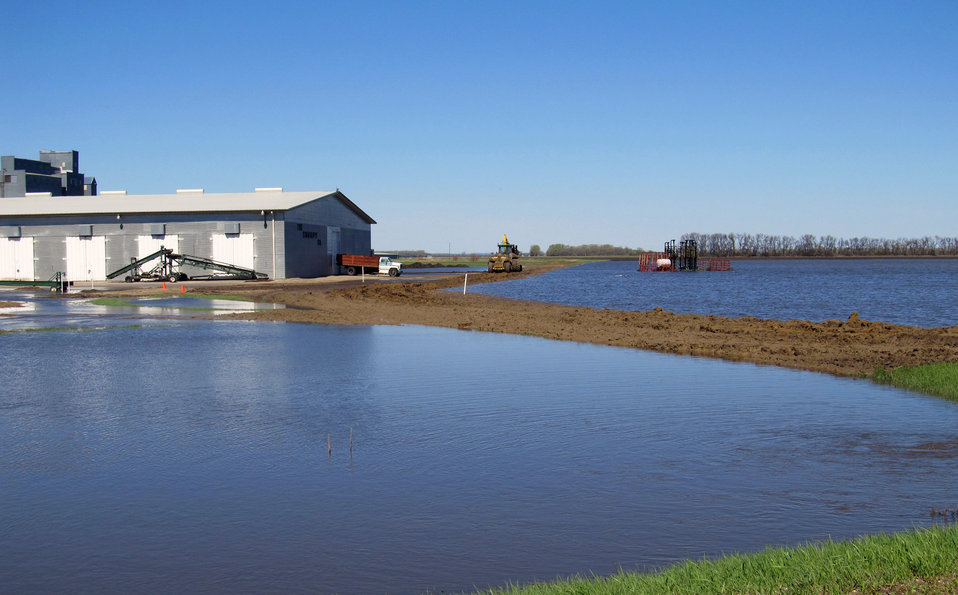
Flooding and water damage in the Park and Tongue River Watersheds located in Cavalier, Pembina and Cavalaier Counties in ND on Thursday, May 23, 2013.